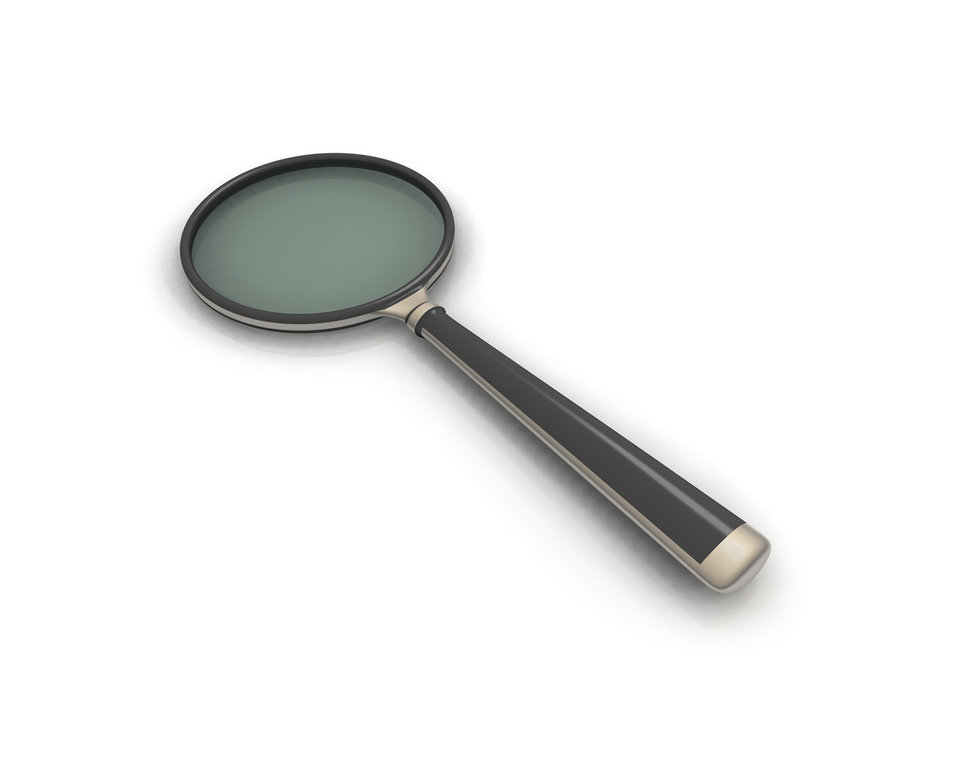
Magnifier

3d magnifier with black handle and chrome.